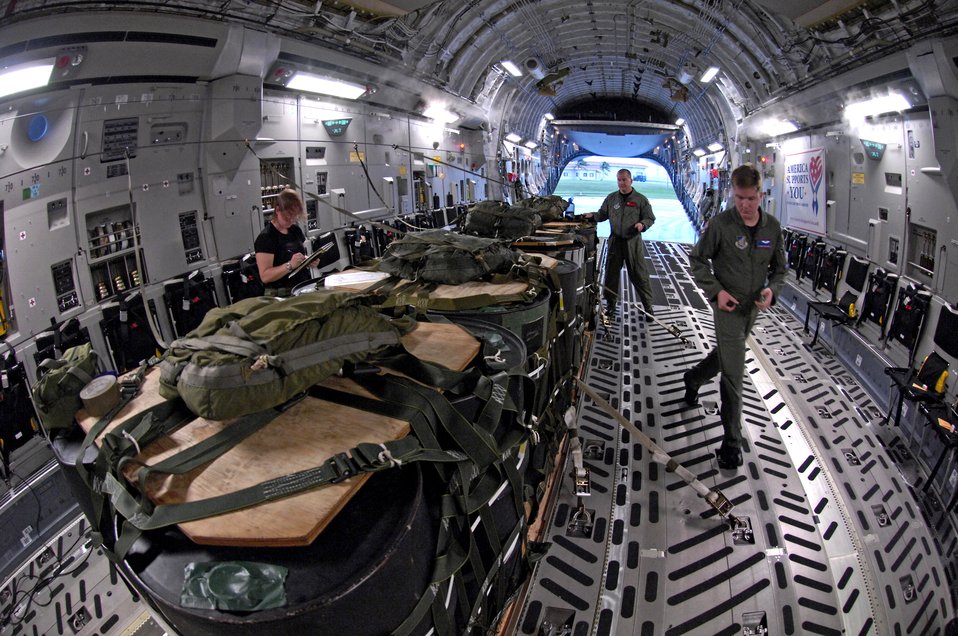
Andersen airdrop

Aircrew members inspect a container delivery system on a C-17 Globemaster III before conducting an airdrop Dec. 14 at Andersen Air Force Base, Guam. The C-17 from Hickam Air Force Base, Hawaii, is conducting airdrop training at Andersen AFB. The Airmen are from the 535th Airlift Squadron.